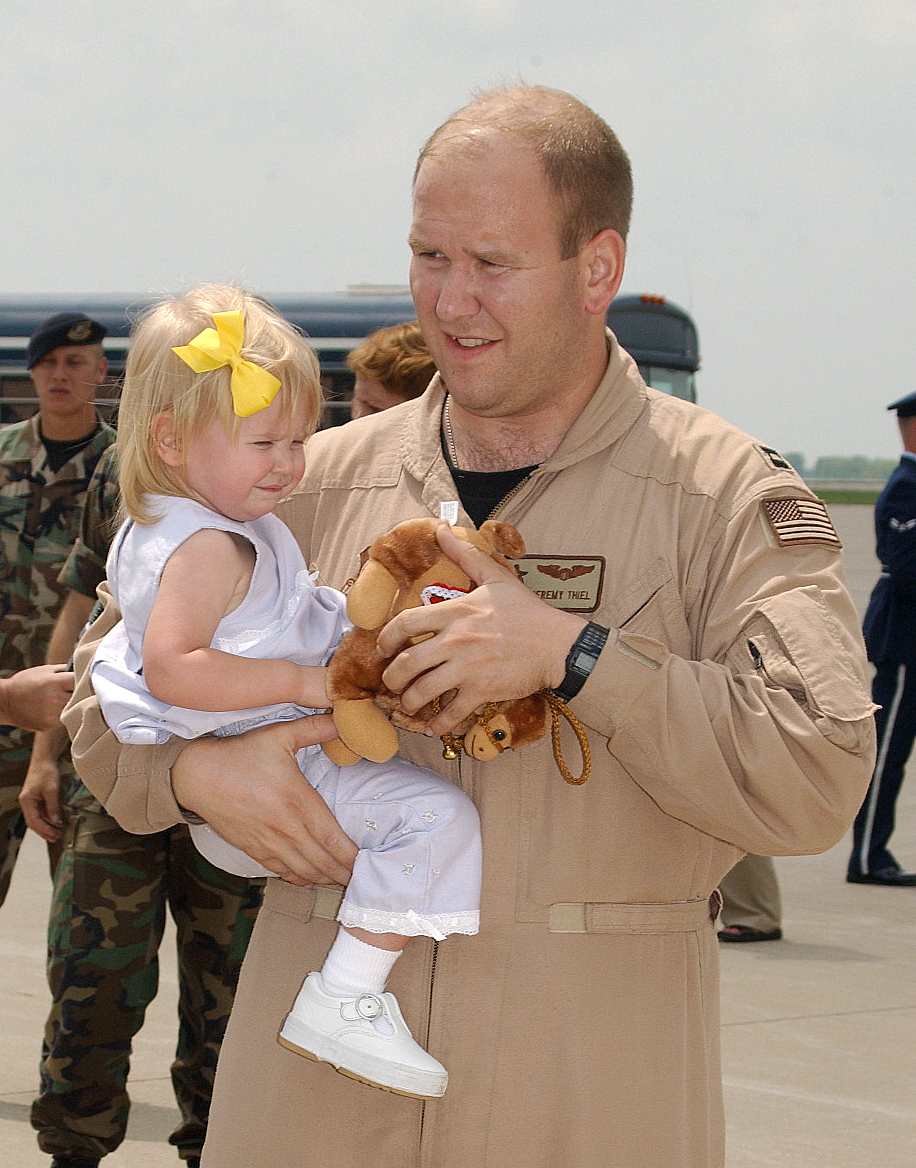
She wore a yellow ribbon

MCCONNELL AIR FORCE BASE, Kan. (AFPN) -- Capt. Jeremy Thiel celebrates his homecoming April 28 with his 22-month-old daughter, Kati. Thiel deployed to Southwest Asia in late January. He is assigned to the 384th Air Refueling Squadron here.